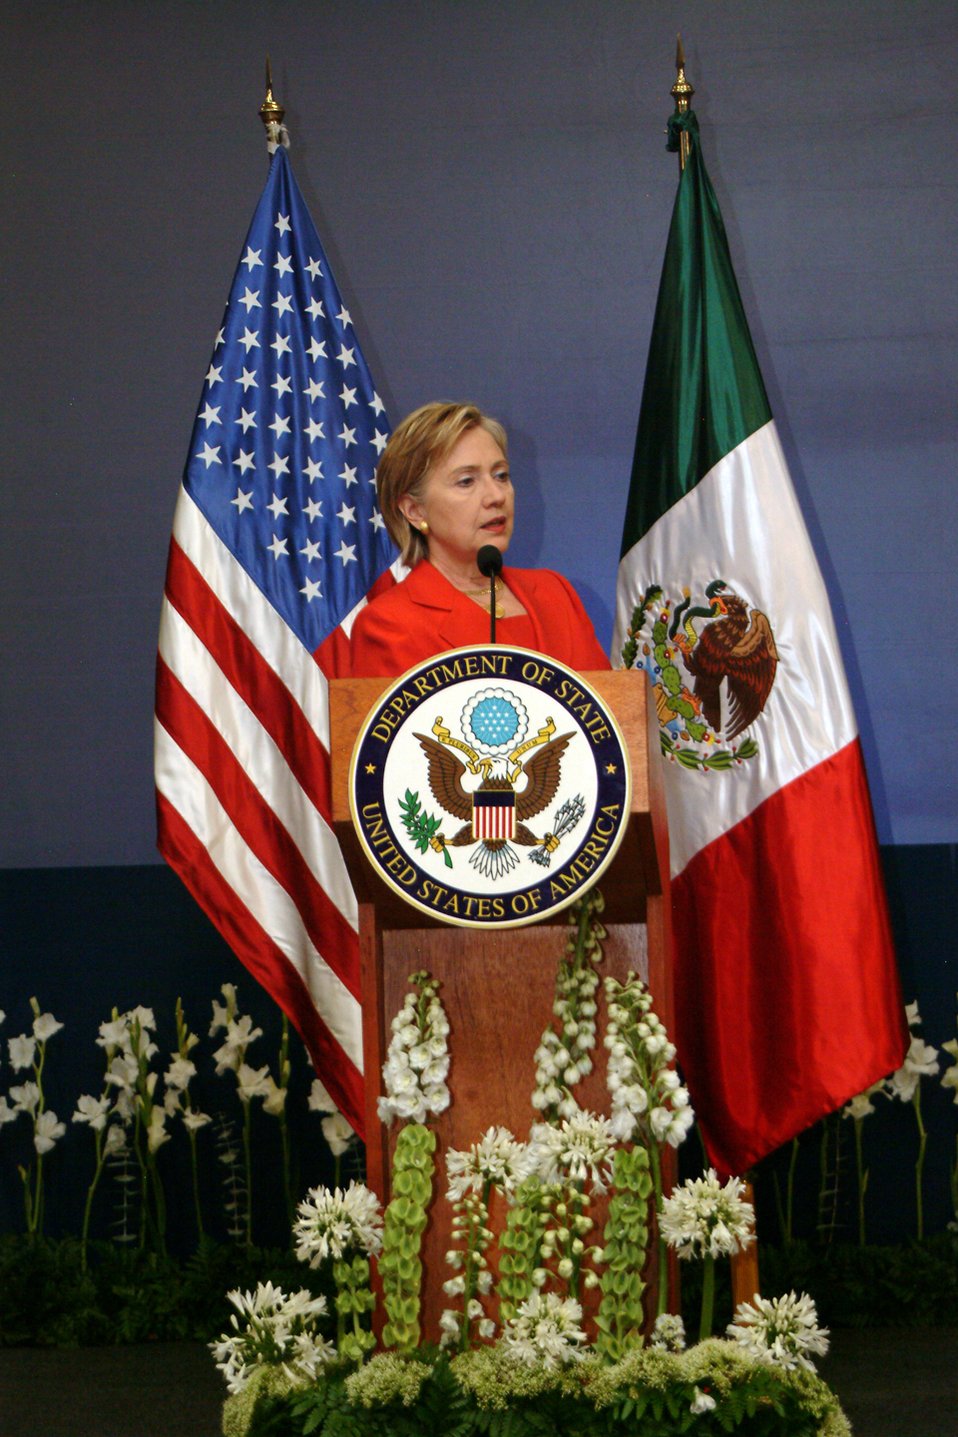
Secretary Clinton at TecMilenio University

U.S. Secretary of State Hillary Rodham Clinton answers questions from the media during a press availability at Tecmilenio University in Monterrey, Mexico March 26, 2009.